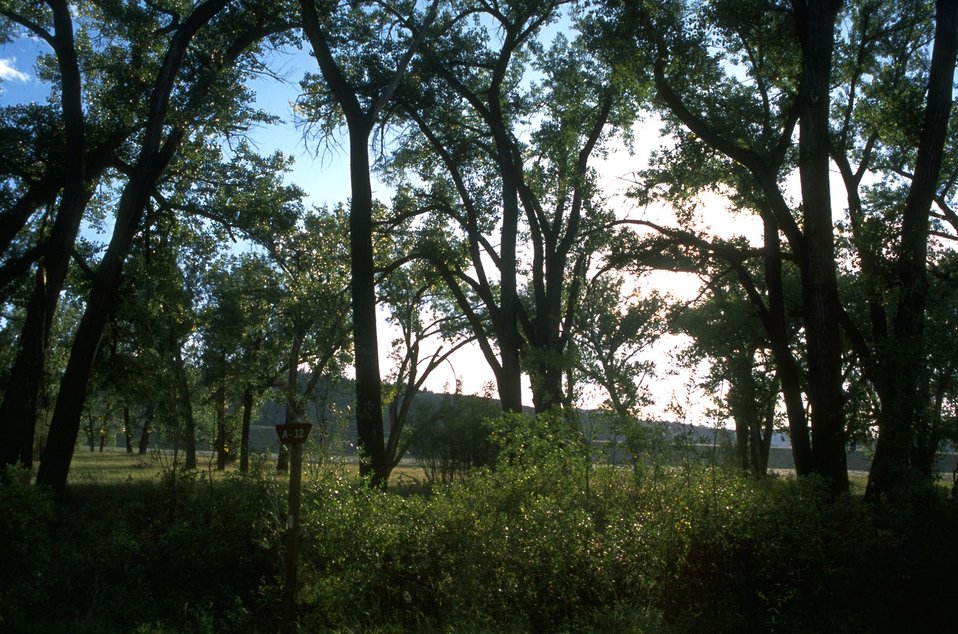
Kipp Recreation Area